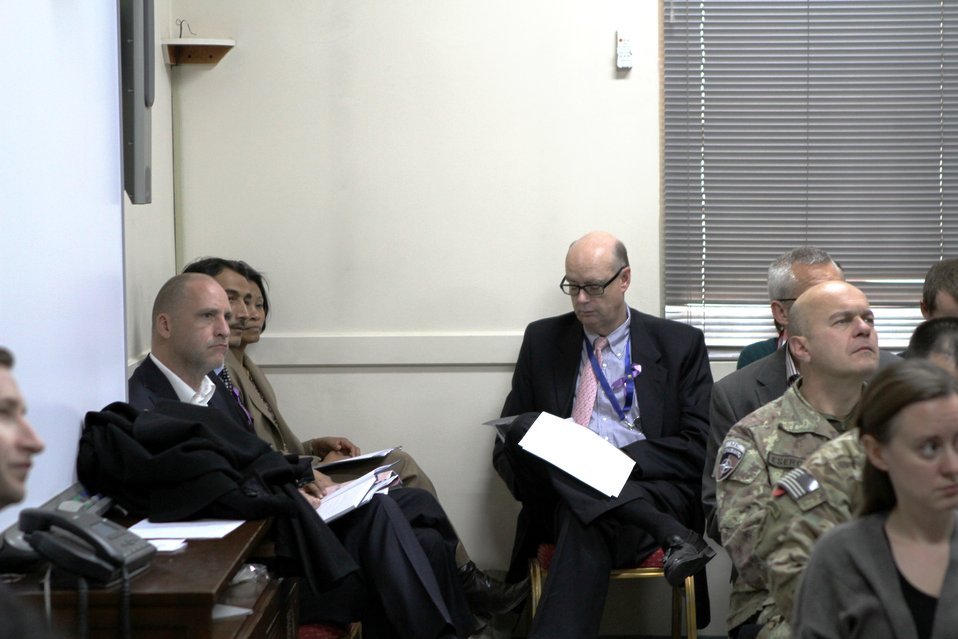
Presentation of the ACTA Civil Society analysis of the FY 1392 Afghan national budget